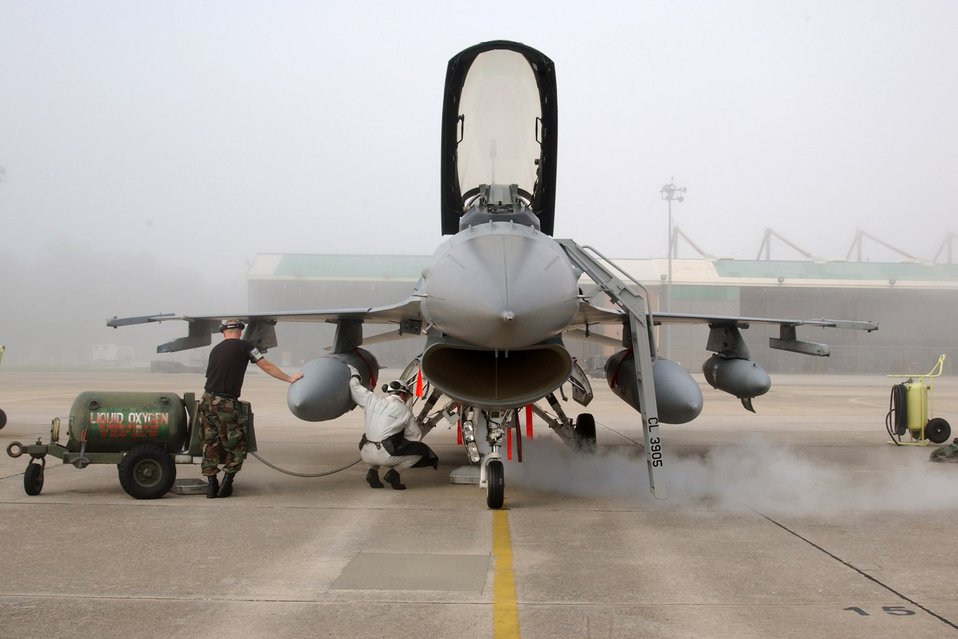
Guard support

Tech. Sgt. Jason Pry (left) and Senior Airman Justin Butler fill the liquid oxygen tank on an F-16 Fighting Falcon in preparation for takeoff from McEntire Air National Guard Base, S.C., Aug. 28.